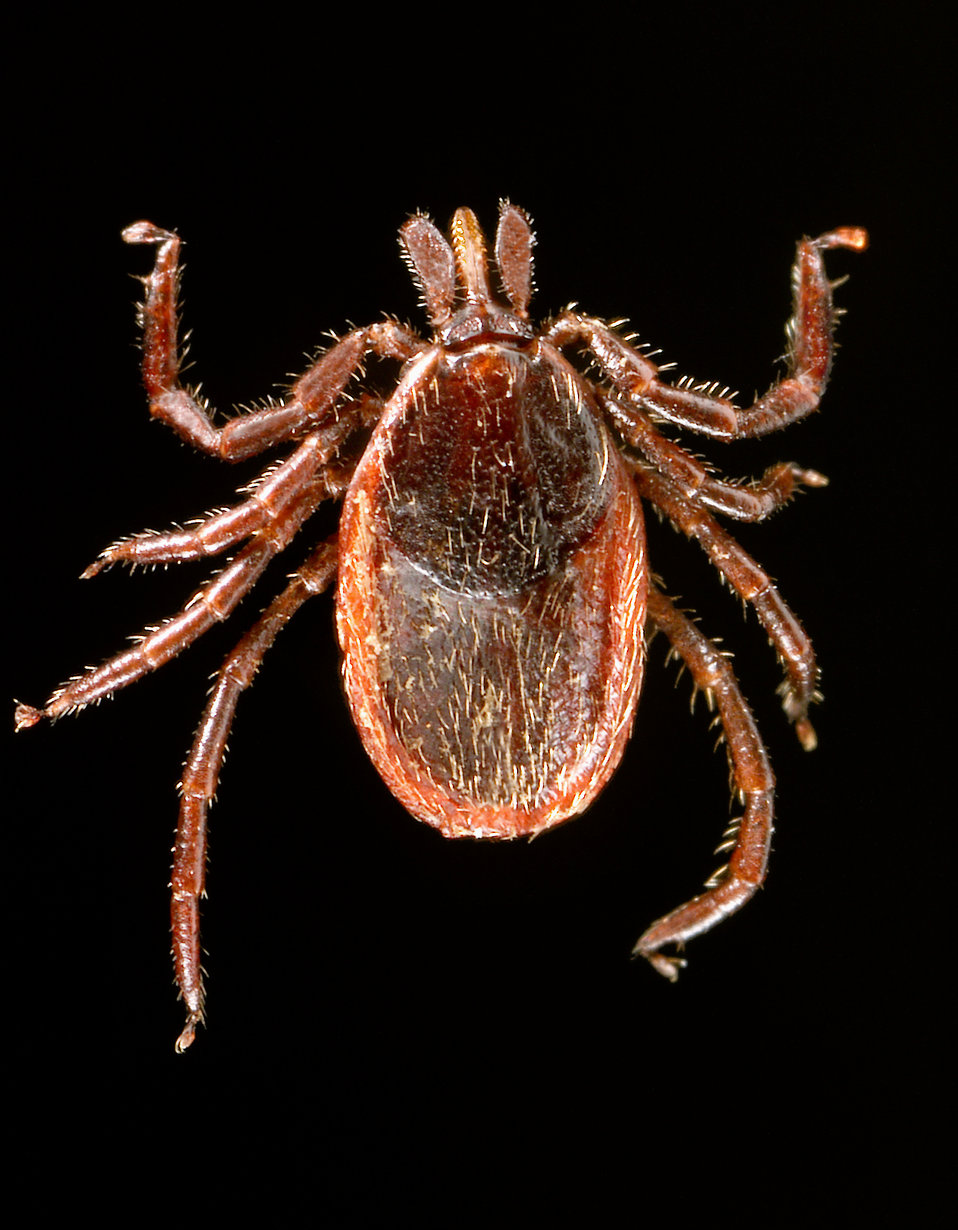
This photograph depicted a dorsal view of an adult female western blacklegged tick, Ixodes pacificus, which has been shown to transmit Borrelia burgdorferi, the agent of Lyme disease, and Anaplasma phagocytophilum, the agent of 'human granulocytic anaplasmosis' (HGA), which was previously known as 'human granulocytic ehrlichiosis' (HGE), in the western United States. The small scutum, or tough, chitinous dorsal abdominal plate, does not cover its entire abdomen, thereby allowing the abdomen to expand many times when this tick ingests its blood meal, and which identified this specimen as a female. The four pairs of jointed legs, places these ticks in the Phylum Arthropoda, and the Class Arachnida.